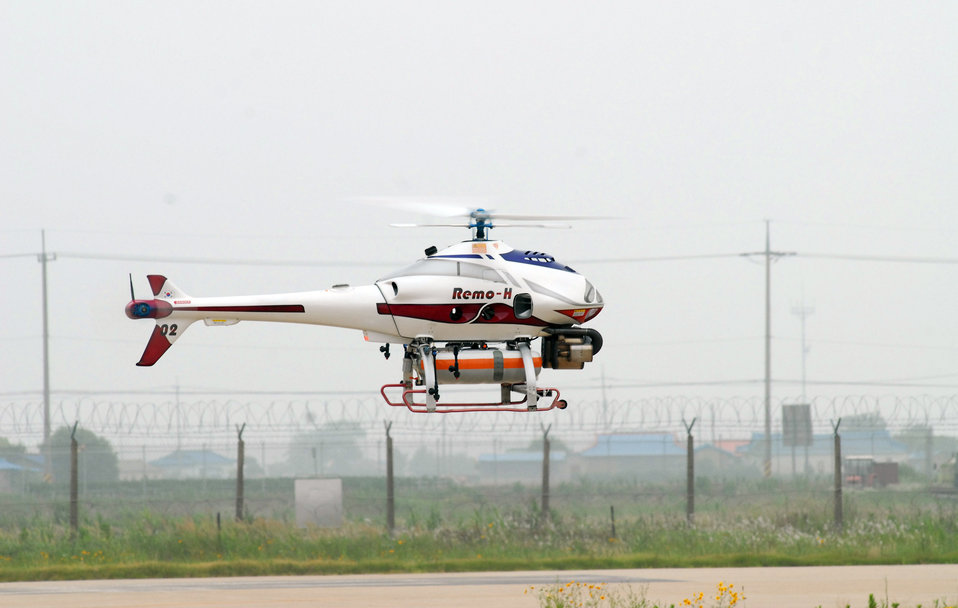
South Korean army UAVs enhance training at Kunsan

An unmanned aerial vehicle recon system belonging to the South Korean army flies June 24 over Kunsan Air Base, South Korea. South Korean army soldiers demonstrated the capabilities of their nuclear, biological and chemical detection technology during a two-day combined training session here June 23 and 24.